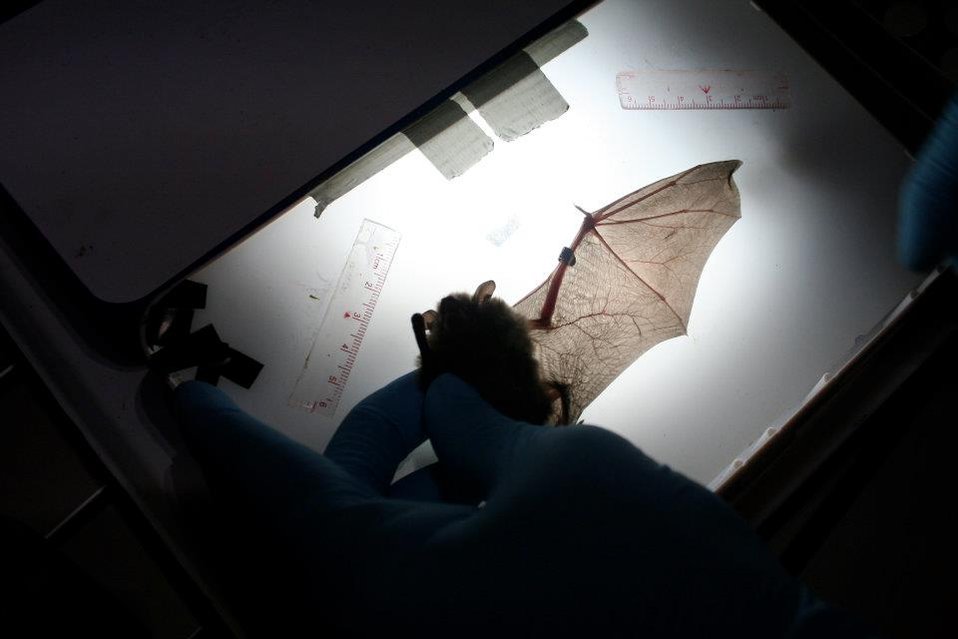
Little brown bat wing inspection